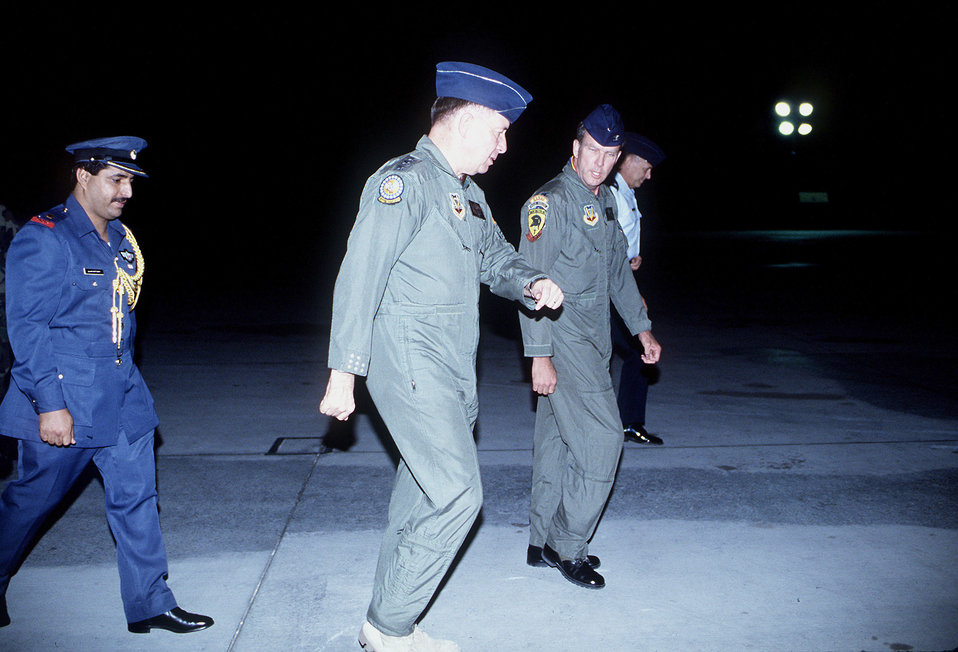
Operation Desert Storm

Lt. Gen. Charles Horner, commanding general, U.S. Central Air Force, is escorted by Col. Neal Patton, base commander, upon his arrival at Shaikh Isa Air Base. General Horner is visiting the base to take part in an awards presentation ceremony in the aftermath of Operation Desert Storm.